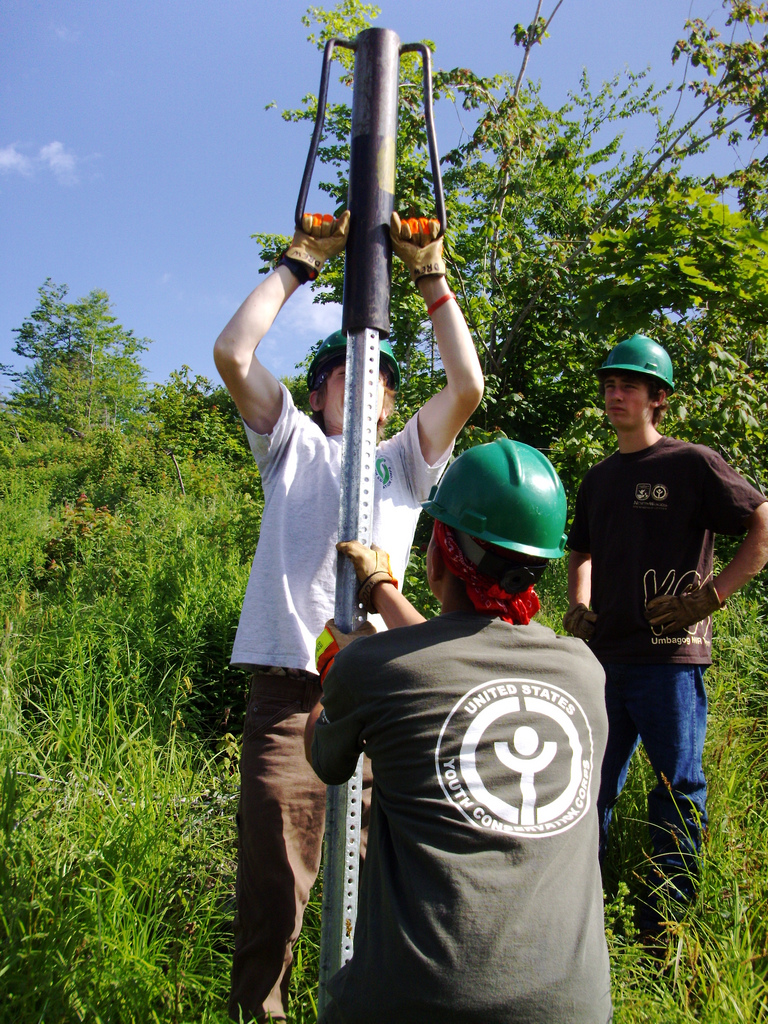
Boundary posting

U.S. Fish and Wildlife Service